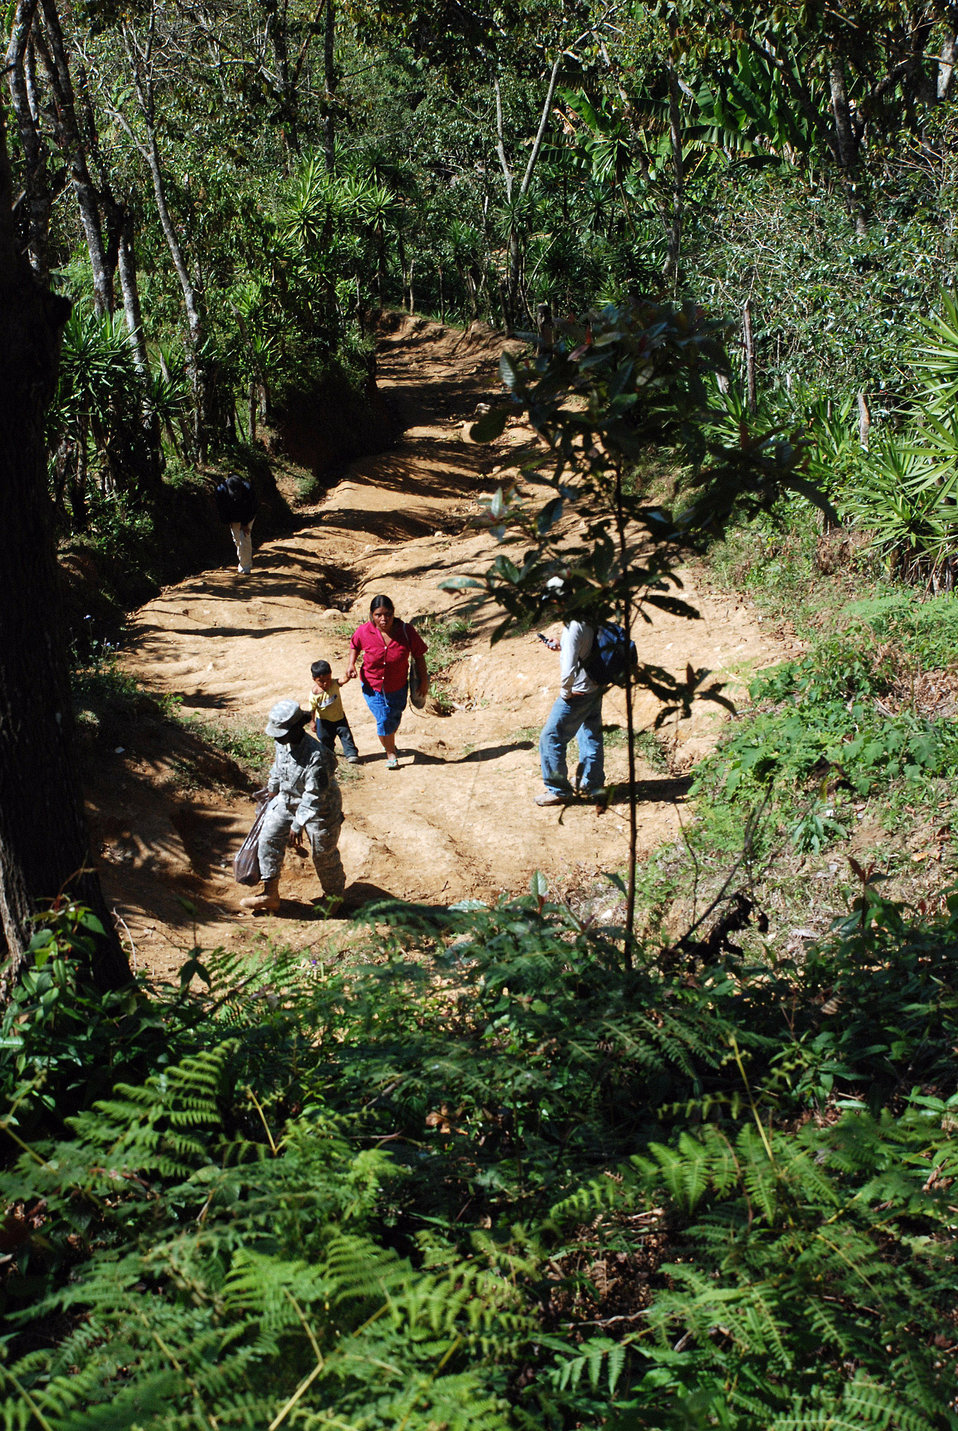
Medical team hikes into Honduran mountains to care for children

U.S. Army Sgt. Onika Hendricks, a member of a pediatric nutrition team, hikes back toward the rally point after visiting several homes in the remote village of Marcala, Honduras, to screen mothers and children for nutritional and dietary health. A team of 16 medical workers and dieticians traveled there from the United States to take part in a pediatric nutrition medical readiness training exercise. The team partnered with specialists from the Honduran Ministry of Health and the medical element of Joint Task Force-Bravo, based at Soto Cano Air Base, Honduras.